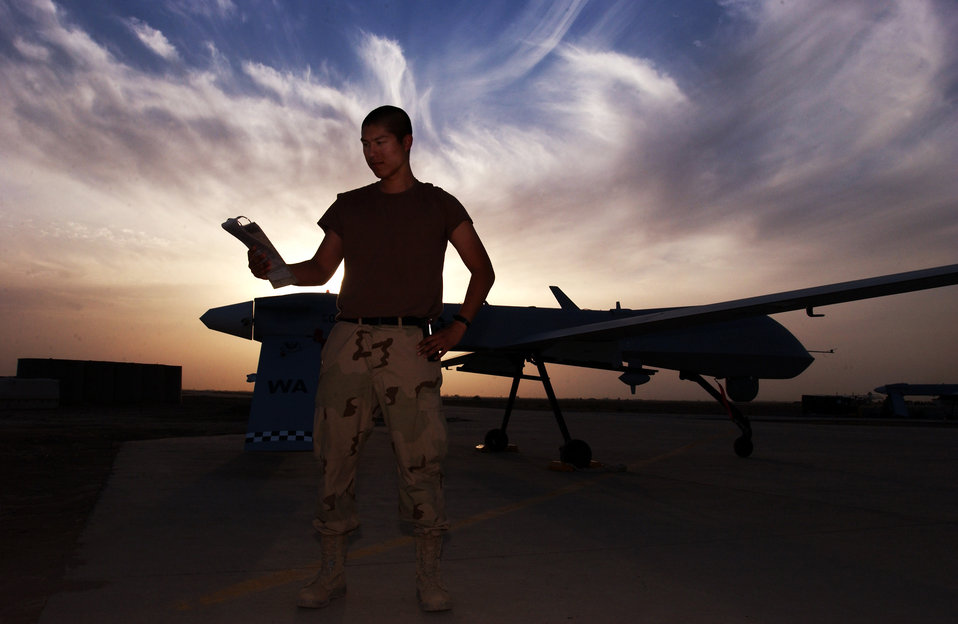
Predator inspection

BALAD AIR BASE, Iraq -- Airman 1st Class Raymond Ong reads a technical order for a MQ-1 Predator unmanned aerial vehicle during a routine inspection here May 27. Airman Ong is a crew chief with the 46th Expeditionary Reconnaissance Squadron.